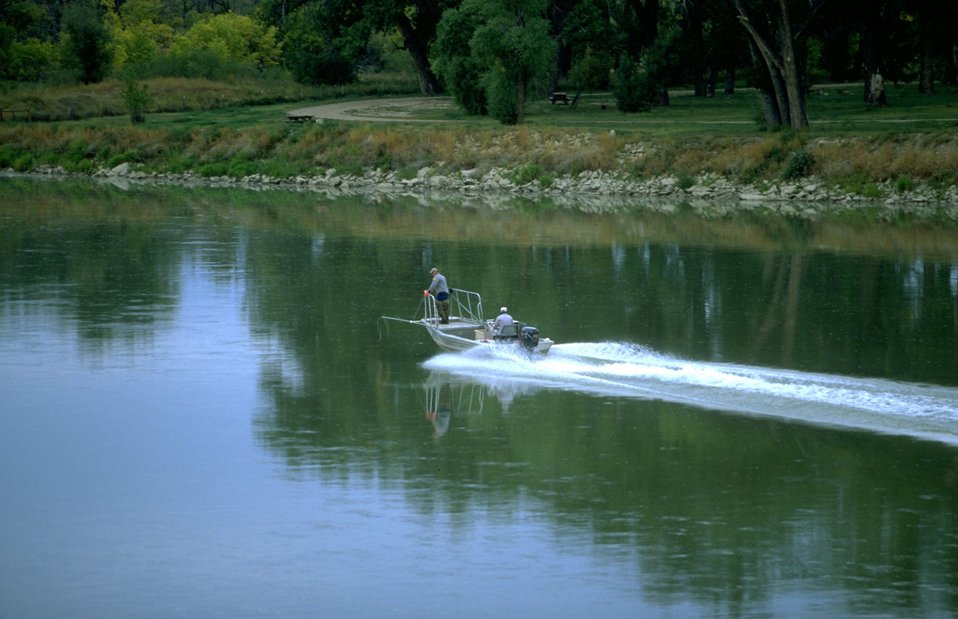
Judith Landing along the Upper Missouri National Wild and Scenic River with MT Dept of Fish Wildlife and Parks fish shocker boat in water